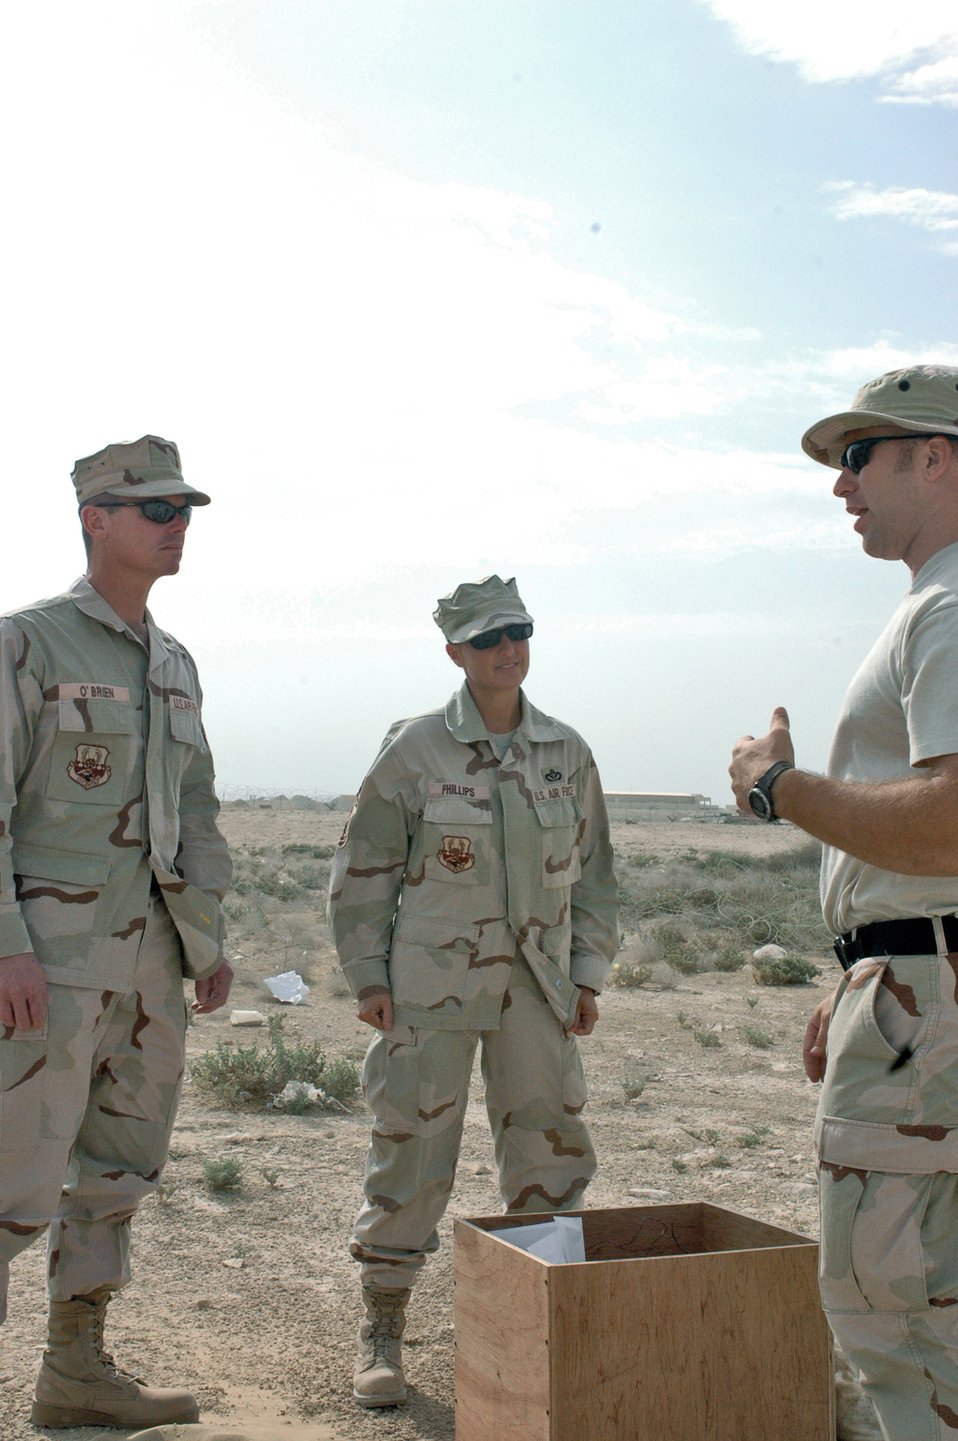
379th Explosive Ordnance Disposal keeps AOR units running

Chief Master Sgts. John O'Brien (left) and Suzanne Phillips, from the 379th Expeditionary Civil Engineer Squadron, are briefed by Tech. Sgt. David Fitzgerald of the 379th ECES's explosive ordnance disposal branch about how EOD Airmen perform their duties and what their mission is here.